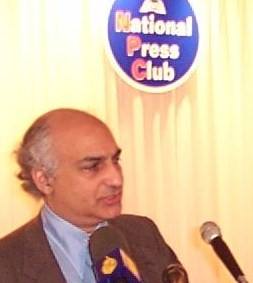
Imad-ad-Dean Ahmad speaking at National Press Club 12/11/01